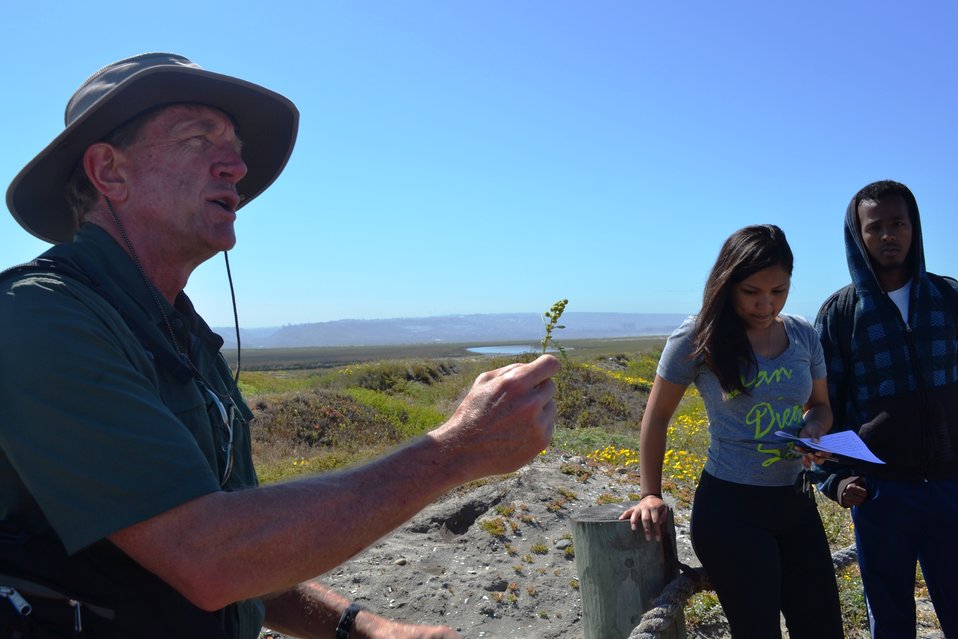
San Diego State University Dr. Mike Simpson teaches his botany class how to identify dune species

TJNWR often provides an outdoor classroom for teachers and professors near and far. Here, Dr. Simpson tests his students on which plant he his holding, the Silver Beach Bur (Ambrosia chamissonis).